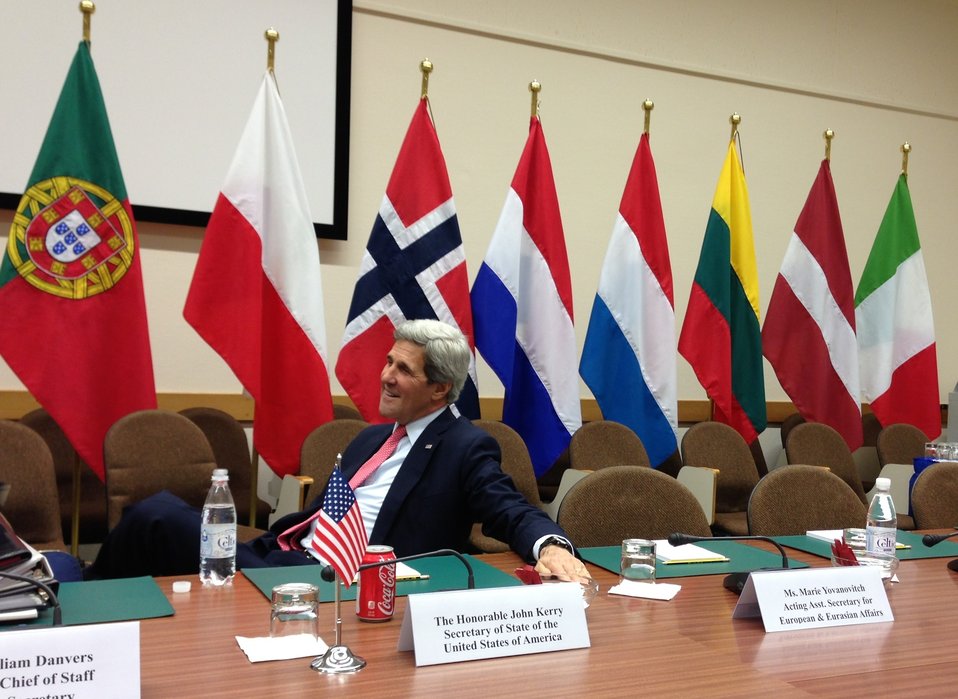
Secretary Kerry Relaxes Before a Meeting at NATO Headquarters

U.S. Secretary of State relaxes in a meeting room between bilateral discussions at a NATO summit meeting in Brussels, Belgium, on April 23, 2013.